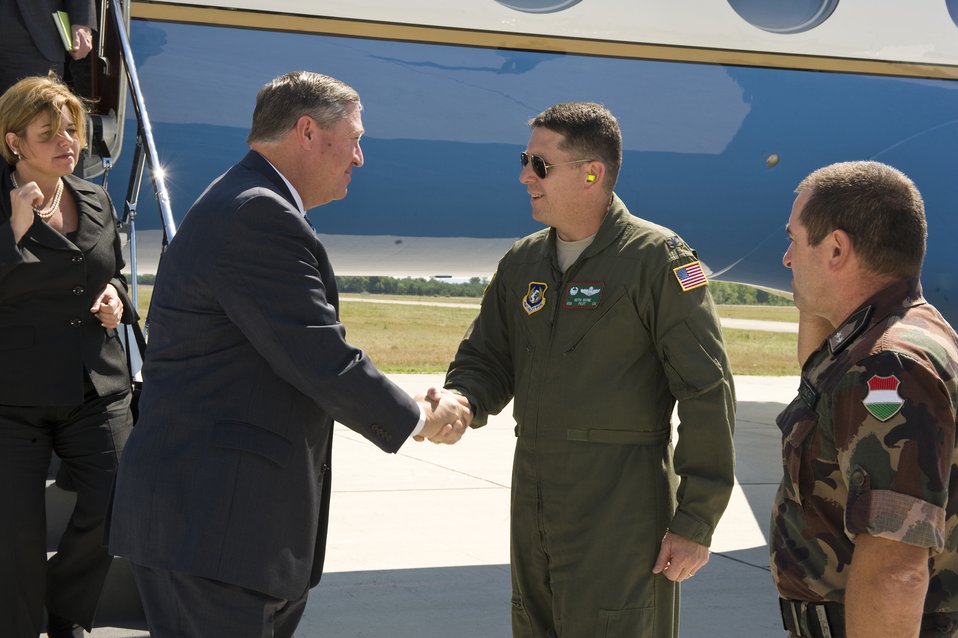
SecAF greets Airmen 8

Col. Keith Boone, commander of the Heavy Airlift Wing greets Secretary of the Air Force Michael Donley after his arrival at Pápa Air Base, Hungary, July 11, 2012. The secretary visited the HAW to speak with Airmen about the direction of the Air Force, meet with them on the job.